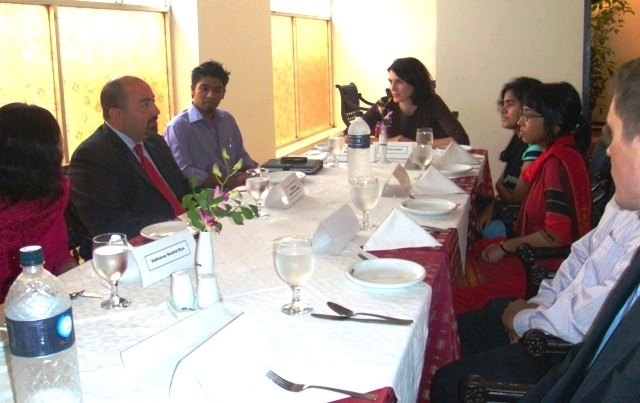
ADAS Keshap Enjoys Lunch With Bangladeshi Youth Community Leaders

U.S. Acting Deputy Secretary of State for South and Central Asian Affairs Atul Keshap enjoys lunch with Bangladeshi youth community leaders in Dhaka, Bangladesh, on July 26, 2010.